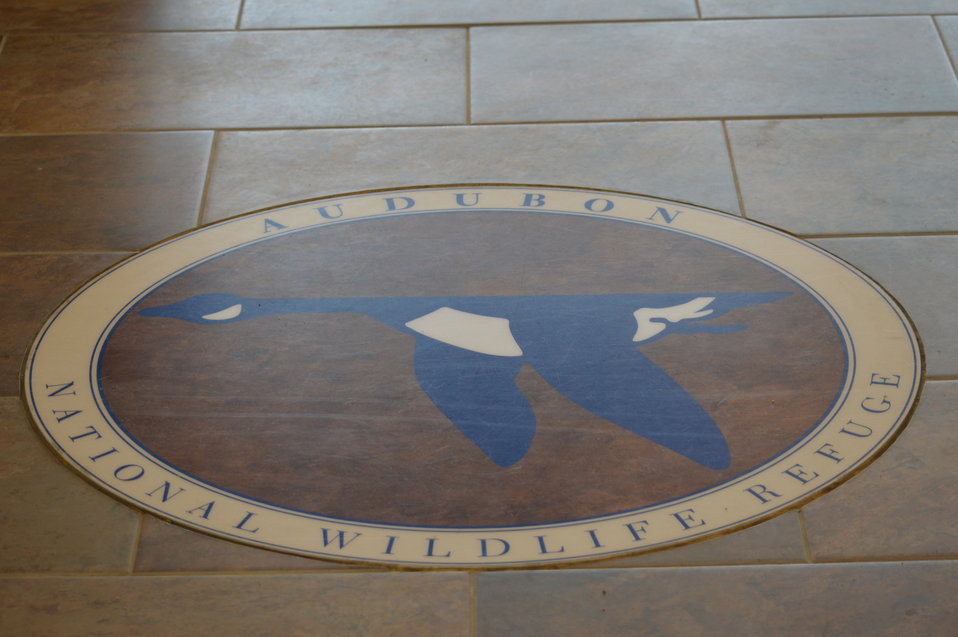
Audubon NWR seal

Seal on the ground with the Refuge symbol inside the entrance to the Visitor Center.